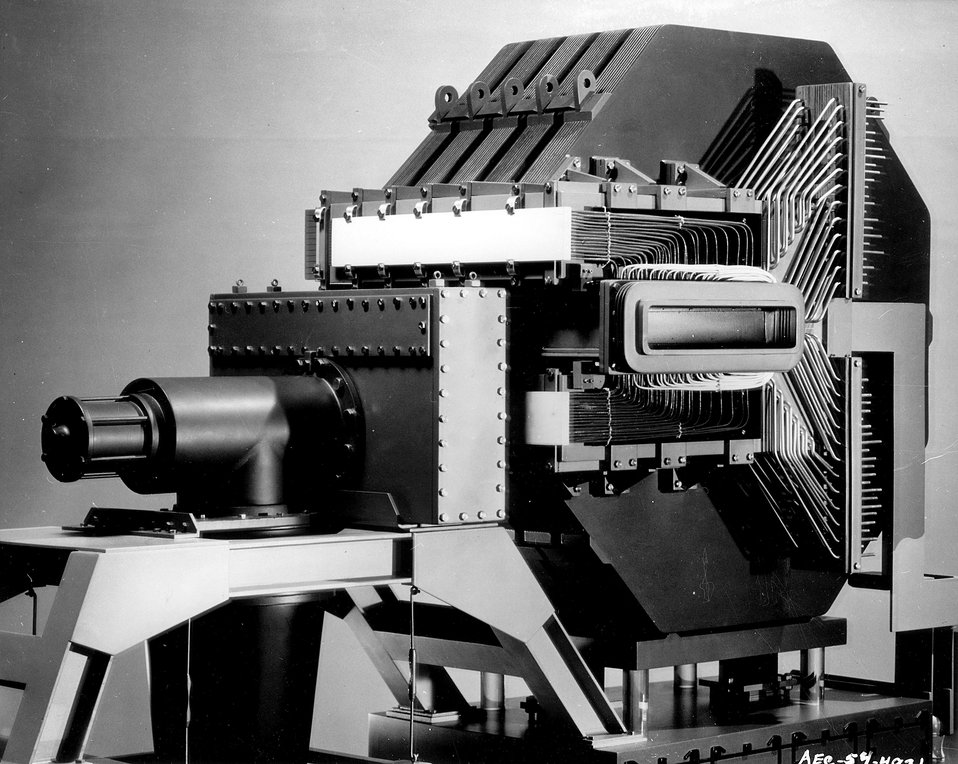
Quarter-scale model of a cross-section of the Cosmotron at Brookhaven National
Laboratory, Upton, New York.